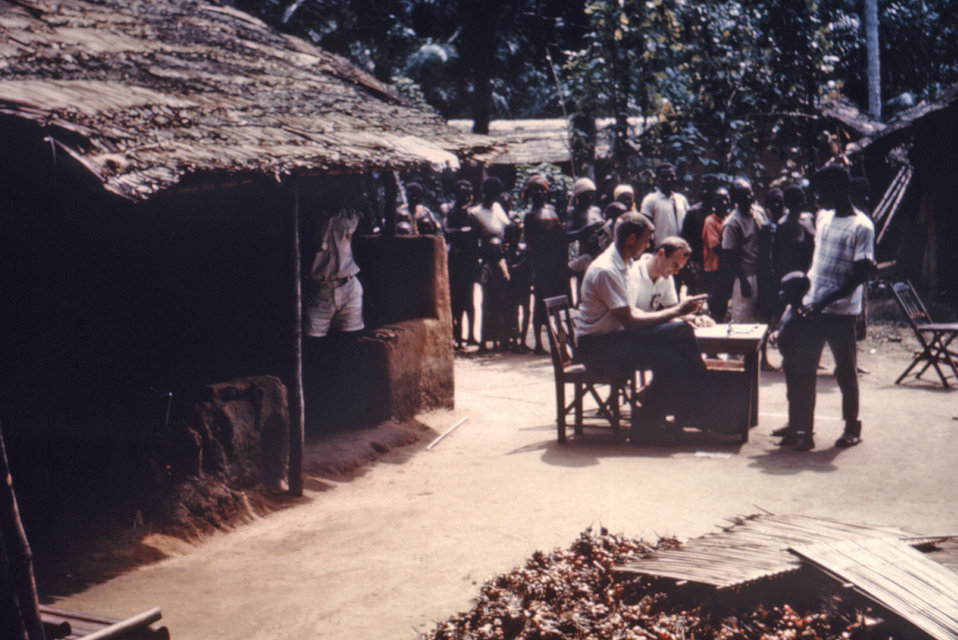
This 1968 photograph depicts Dr. William H. Foege of the CDC, seated closest to the camera, participating in the issuance of ration cards to the needy in Port Harcourt, Nigeria.